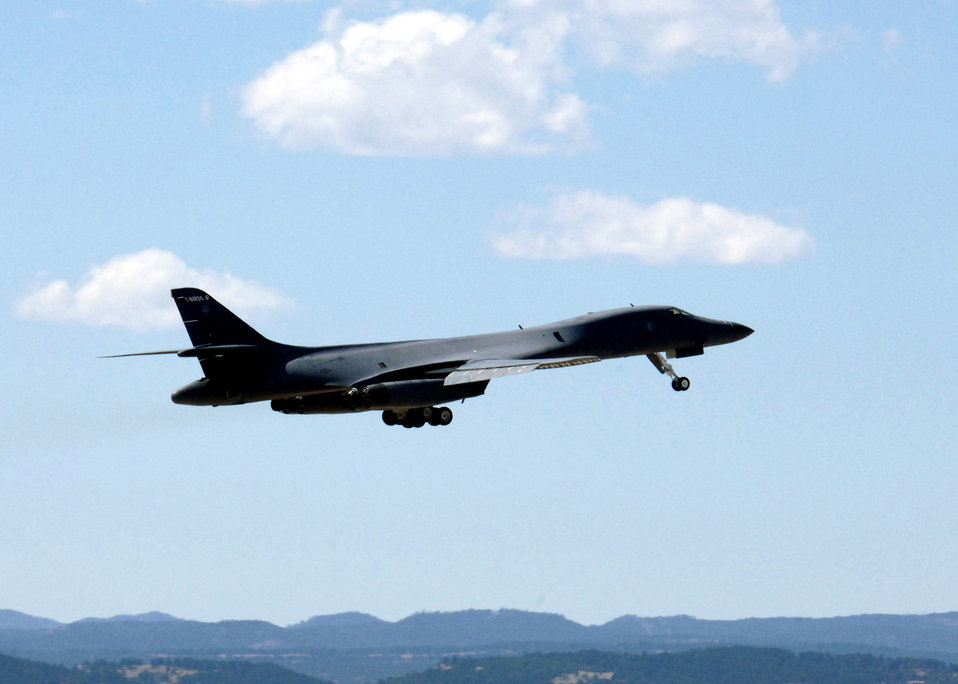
'Touch and go'

A B-1 Lancer from the 28th Bomb Wing takes off at Ellsworth Air Force Base, S.D., on Thursday, April 13, 2006.